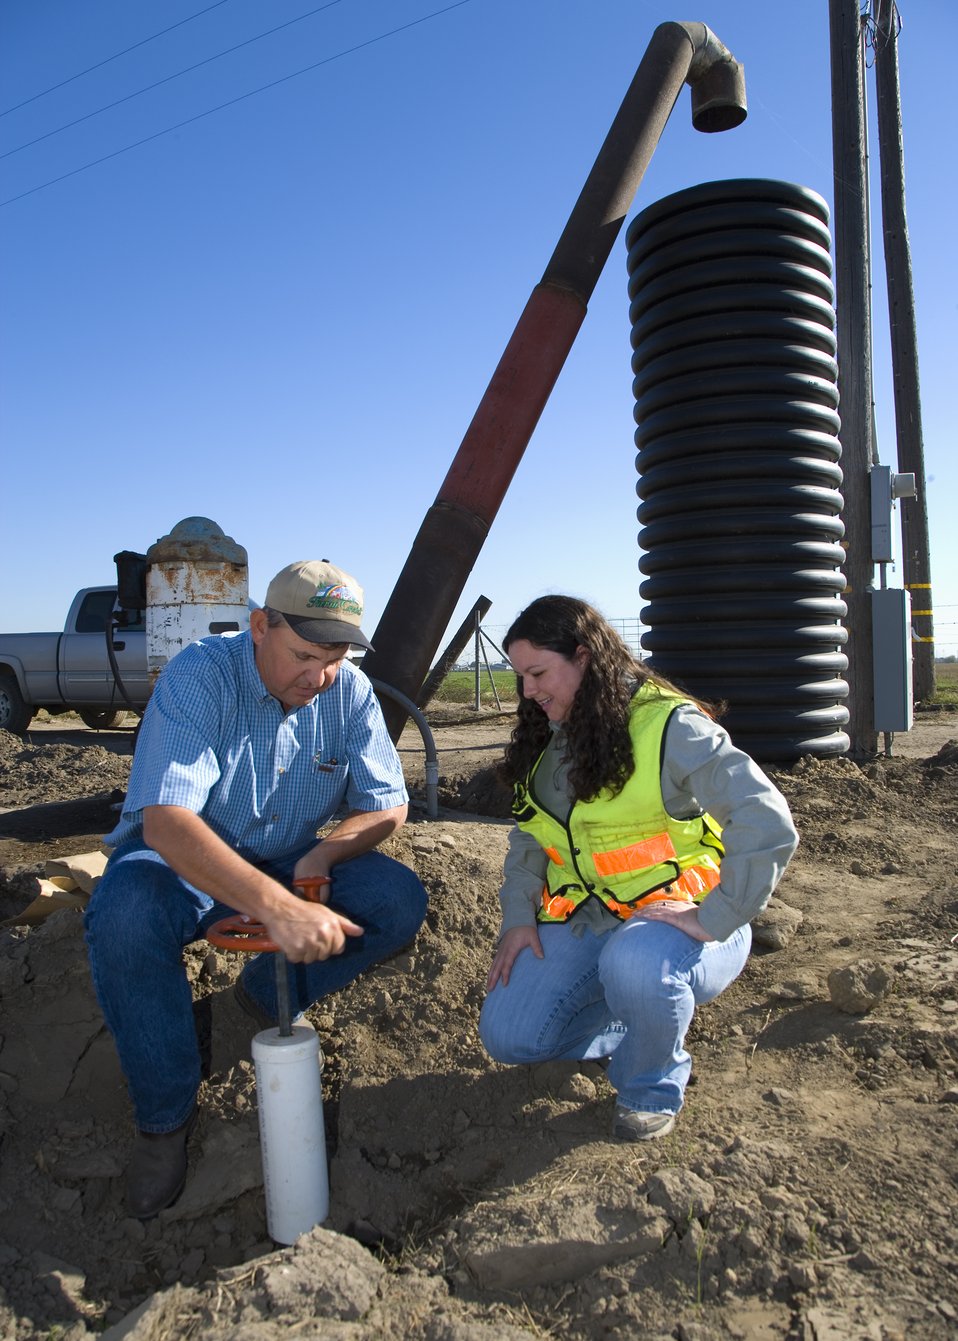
NRCS and farmer inspecting stand pipe on a dairy farm in California.